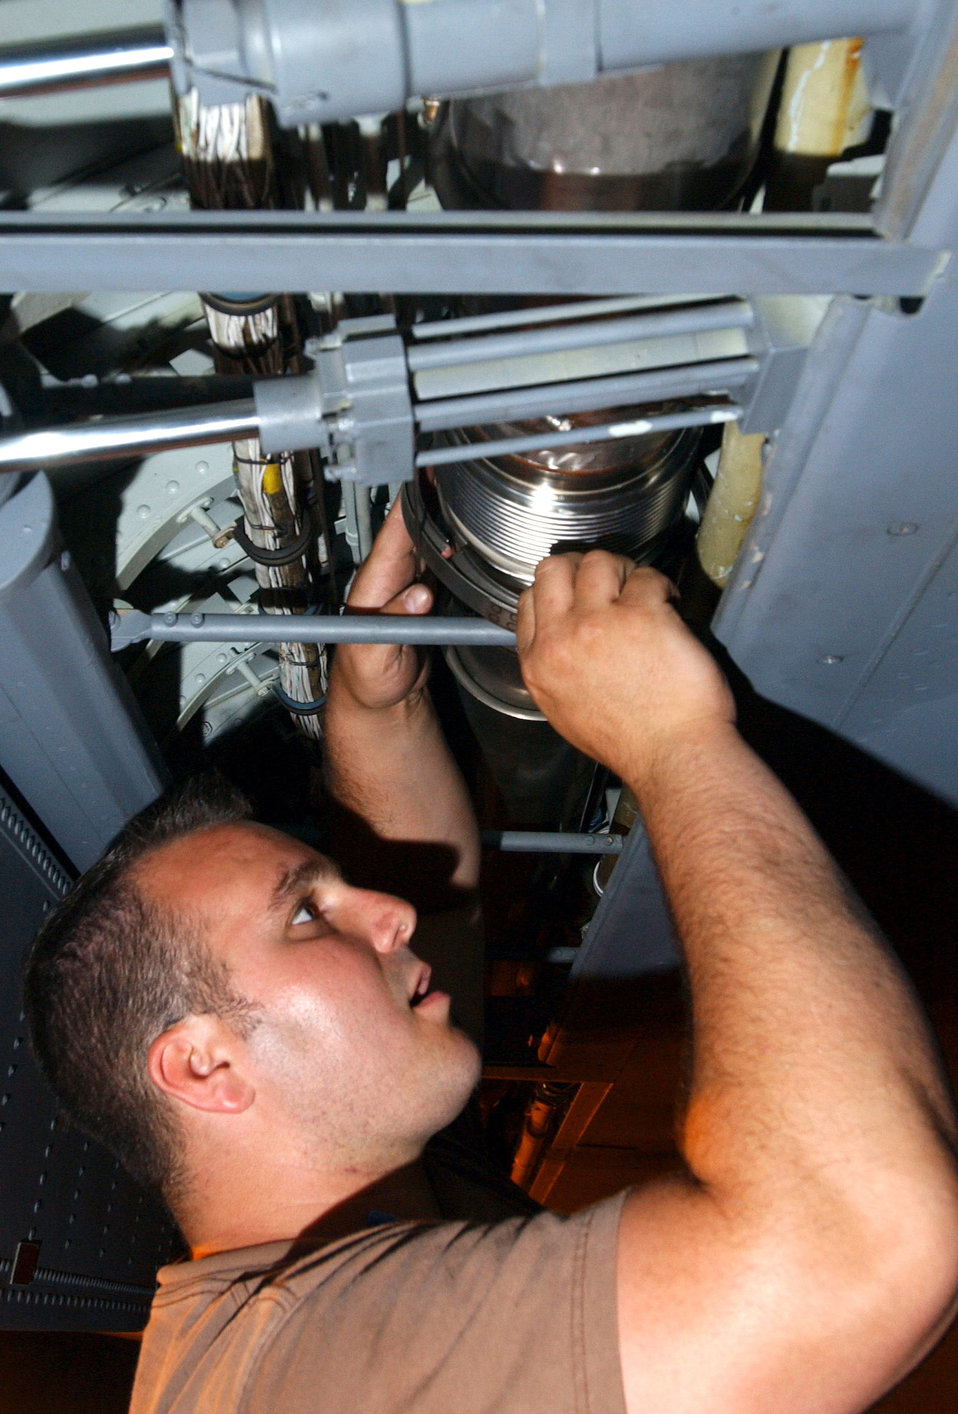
Duct replacement

ROYAL AIR FORCE MILDENHALL, England -- Staff Sgt. Shane Hood replaces a leading-edge duct which supplies bleed air to the air conditioning system on a KC-135 Stratotanker here July 10. Sergeant Hood is a crew chief with the 100th Aircraft Maintenance Squadron.